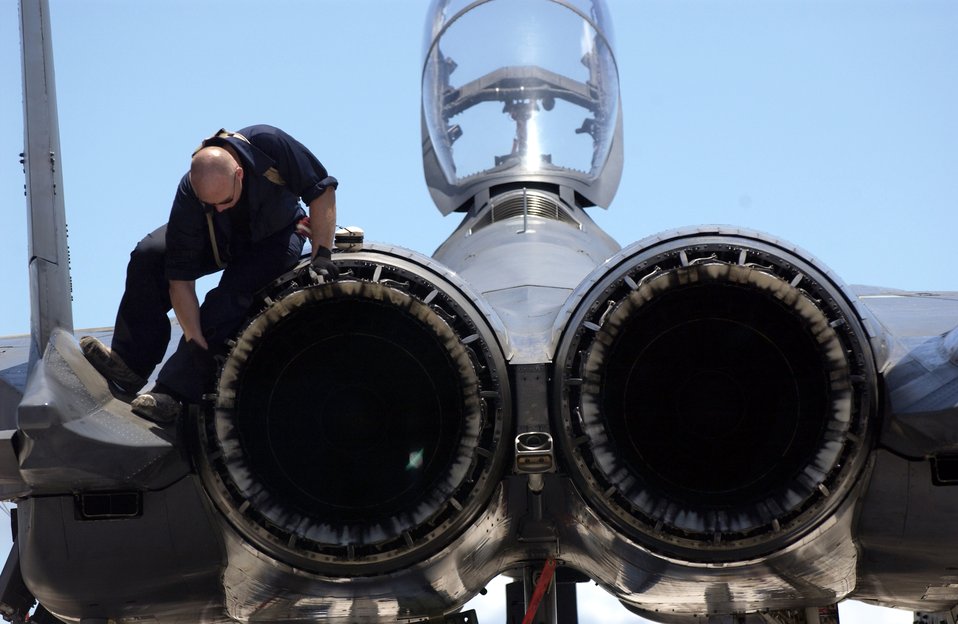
Strike Eagles stay sharp

Senior Airman Casey Rietdyk checks an F-15E Strike Eagle for airframe damage after a training sortie at Andersen Air Force Base, Guam, on June 5. The Strike Eagles are here through September as part of an air expeditionary deployment. Airman Rietdyk is assigned to the 36th Expeditionary Aircraft Maintenance Squadron.